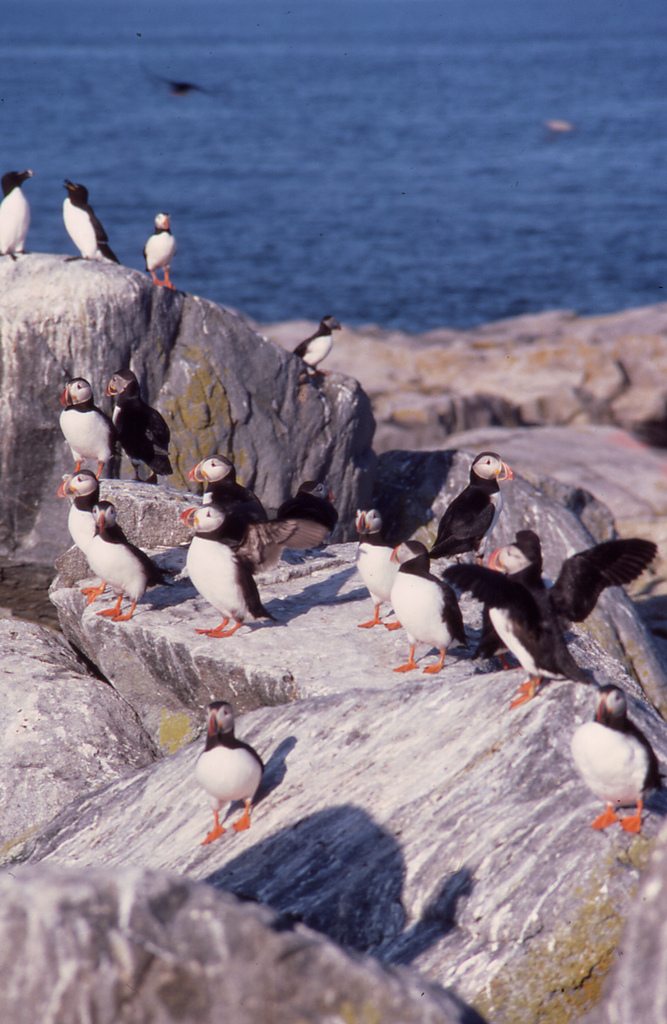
Bird colony

Maine Coastal Islands National Wildlife Refuge/USFWS